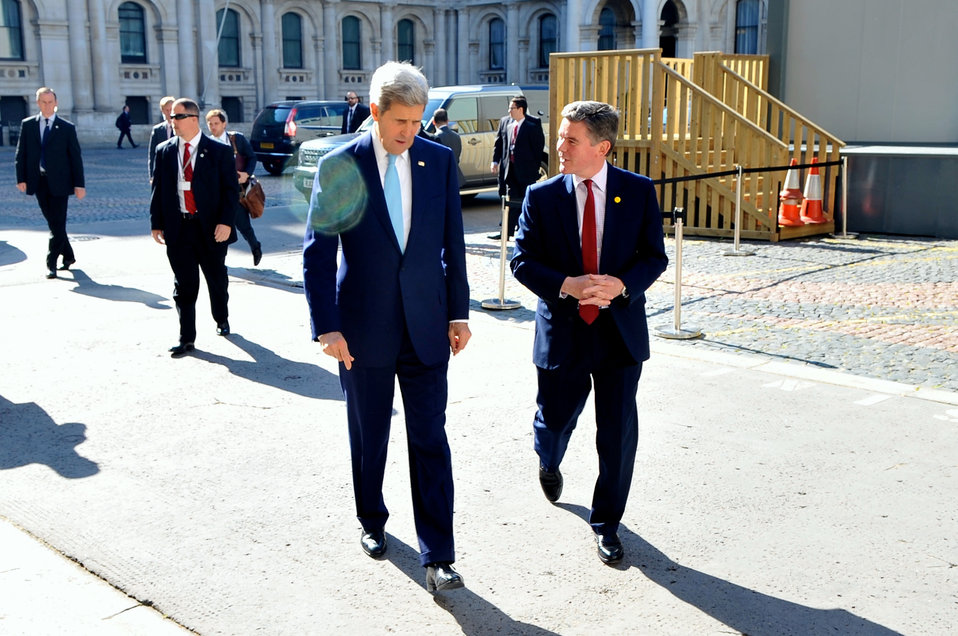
Secretary Kerry Arrives at British Foreign Office for Meetings

U.S. Secretary of State John Kerry walks with British Minister of State for Foreign and Commonwealth Affairs Hugh Robertson after arriving at the Foreign and Commonwealth Office in London for an array of ministerial meetings on May 15, 2014.